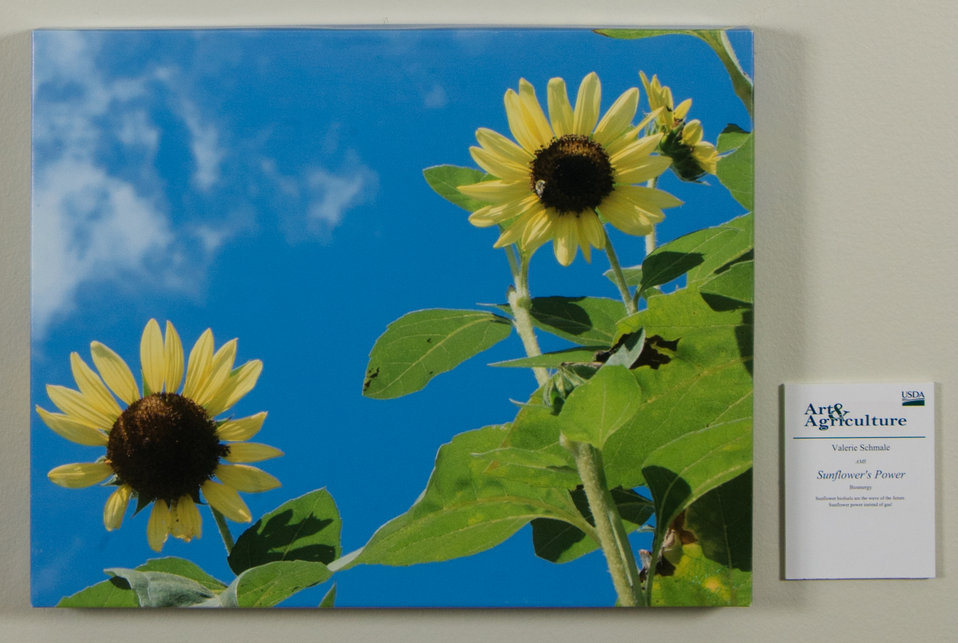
Online Viewer's Choice entries of the 2013 Art & Agriculture, Tuesday, July 9, 2013, in the South Building, Washington, D.C. Themes were expressed by employees from across the department and the contest was open to full-time and part-time USDA employees. Winning artwork will be displayed till the end of the year. U.S. Artistic expression is a creative outlet that is vital for an individual to grow and develop.